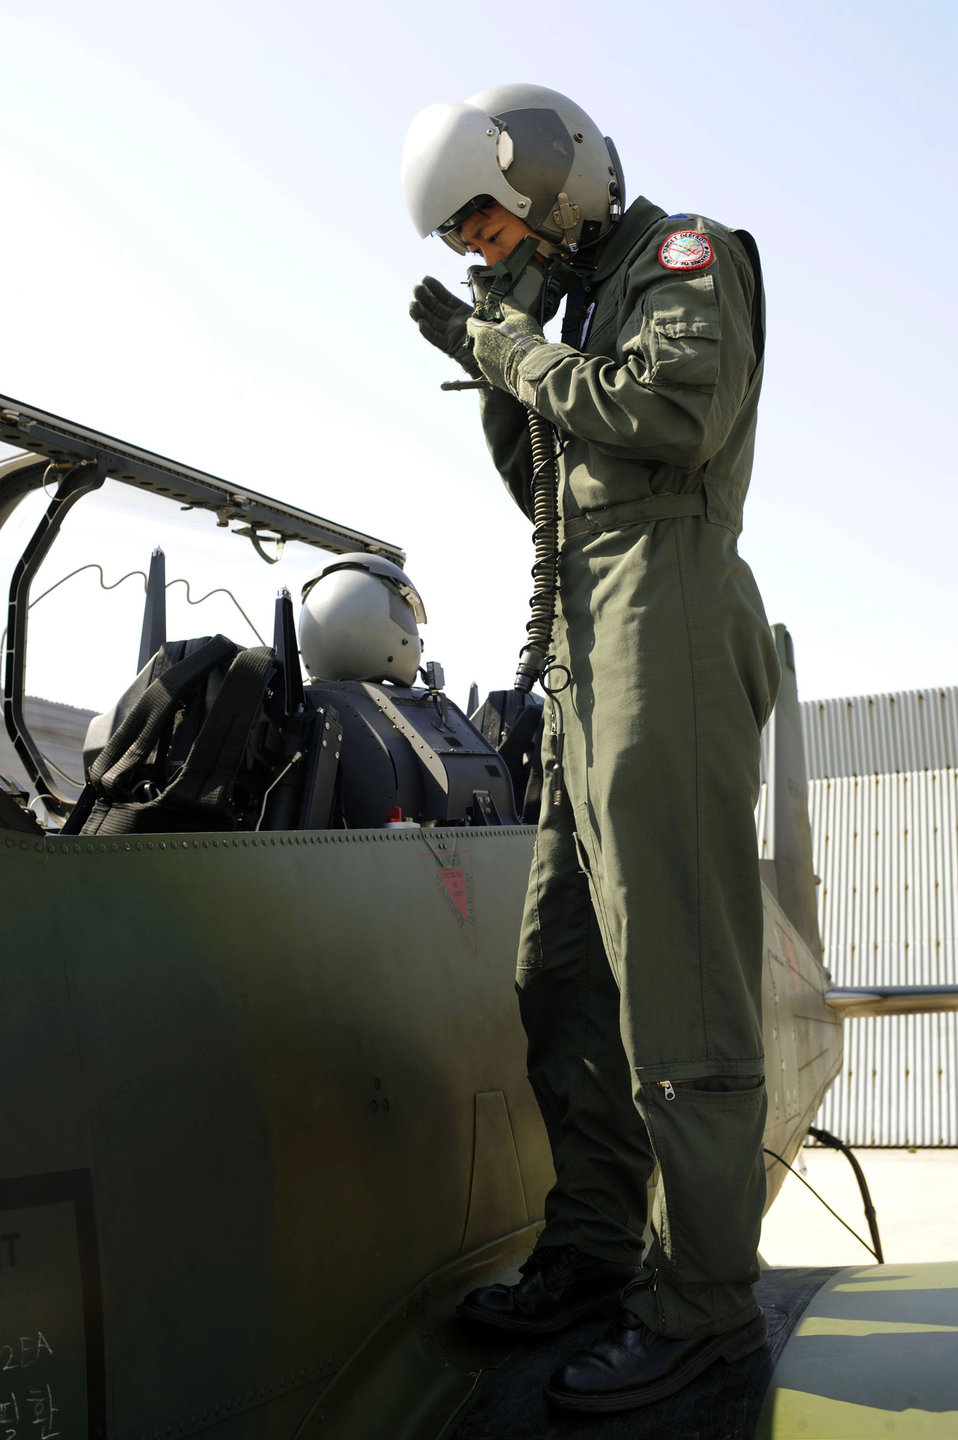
?Buddy Wing? wraps up at Osan

South Korean air force Maj. Jwa-Ryong Park puts his helmet on, part of his preparations before taking off in his KA-1 aircraft April 15, 2010, at Osan Air Base, Republic of Korea. Major Park is the 237th Tactical Fighter Squadron intelligence commander.